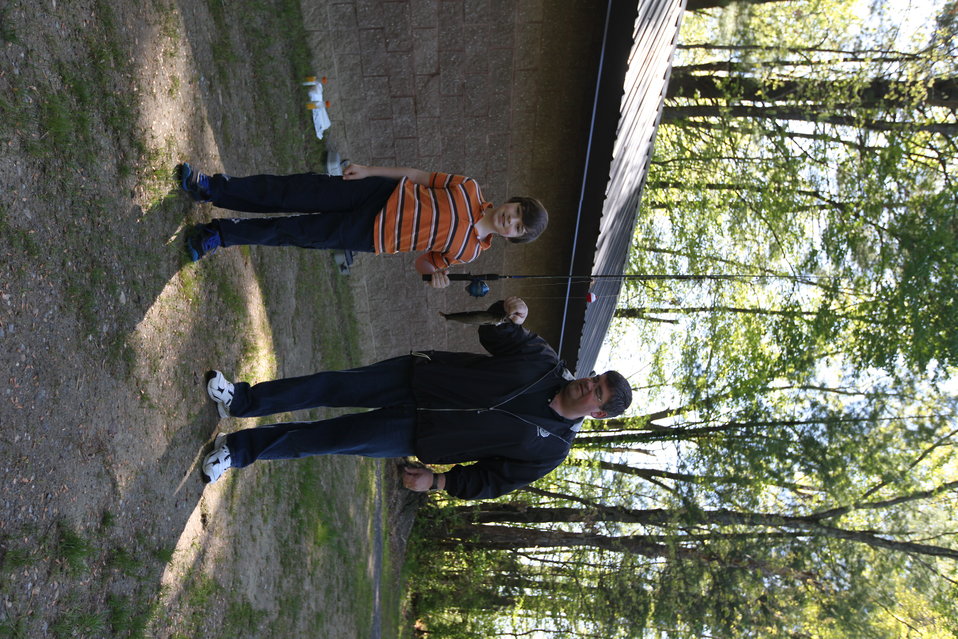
Youth Fishing Derby 2012

Megan Nagel/USFWS